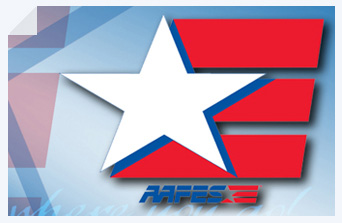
Army and Air Force Exchange Service logo (color).